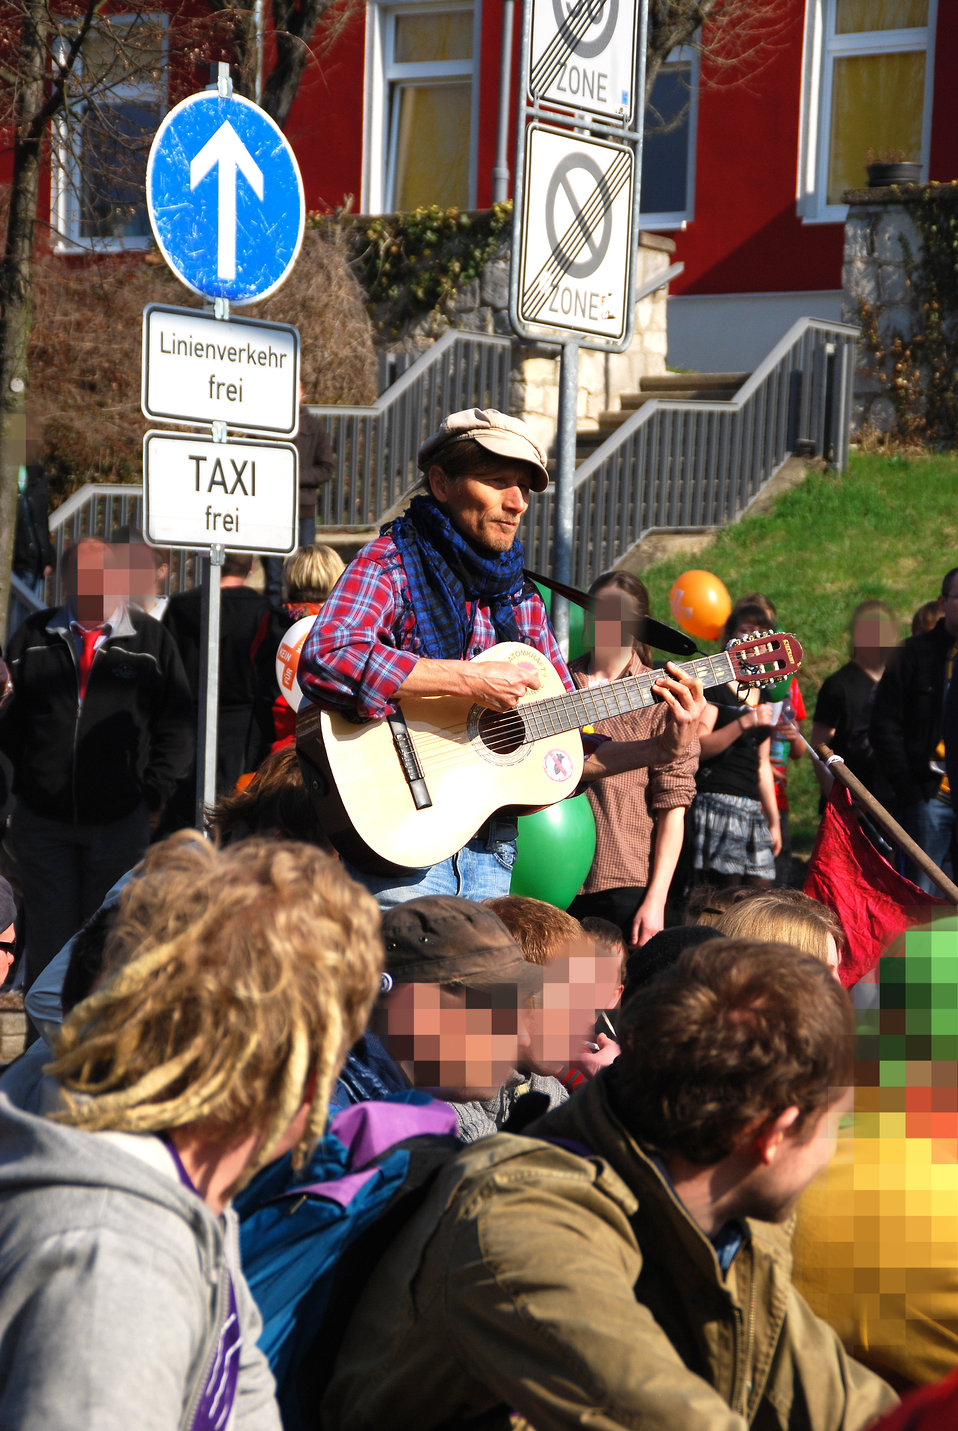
Proteste gegen den Nazi-Aufmarsch am 24.3.2012 in Frankfurt (Oder)